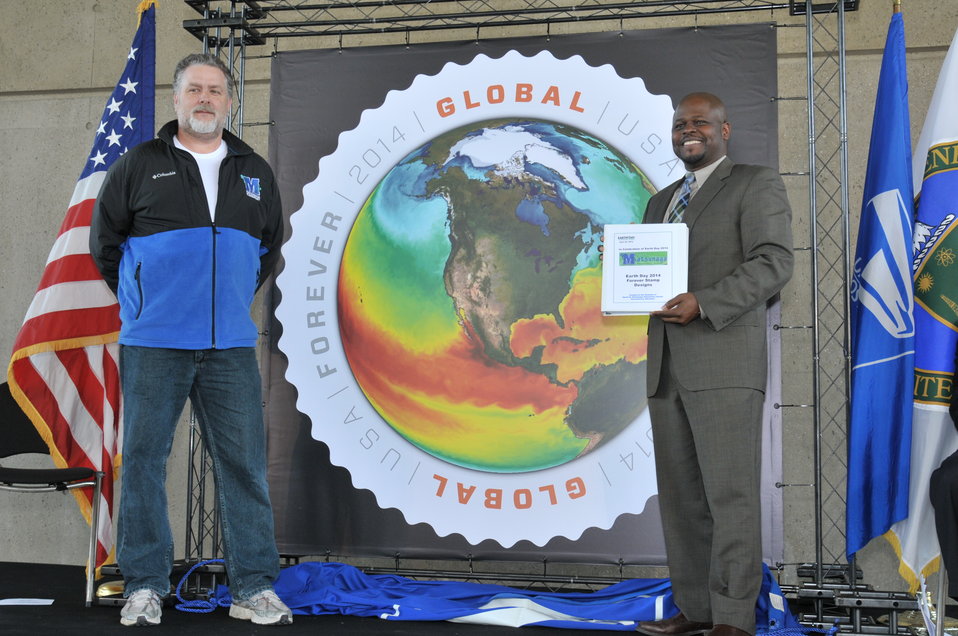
U.S Postal Services introduces a new Global: Sea Surface temperatures forever stamp at the Earth Day program at Department of Energy on April 22, 2014. ( DOE Deputy D.Poneman,T.Day, C.Williams, C.Anderson II, J.Colin Ph.D, Dr. K. Sullivan, K.Tobin Ph.D, W. Gicher Jr)